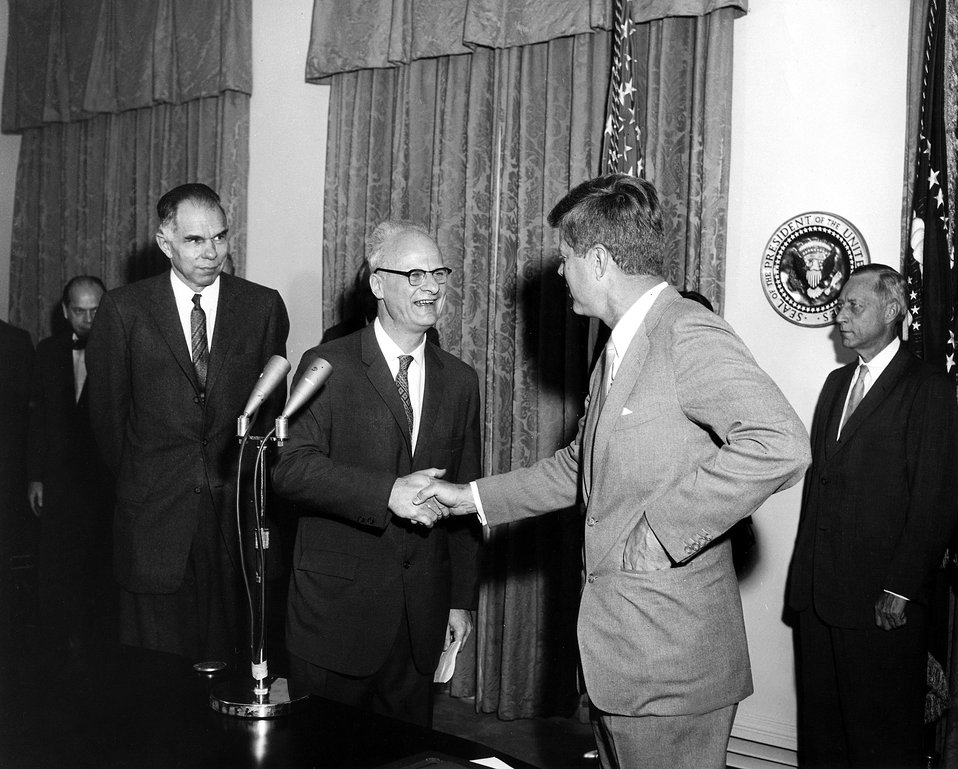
Hans Bethe and President John F. Kennedy.